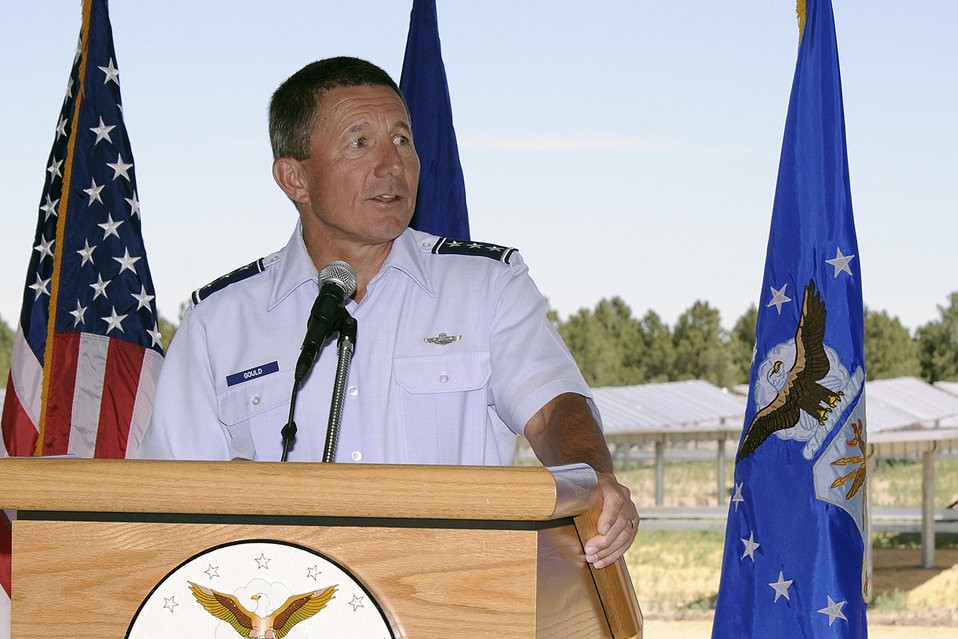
Academy hits switch on 6-MW solar array

Lt. Gen. Michael C. Gould speaks at the dedication ceremony for the Air Force Academy's 6-megawatt solar array June 13, 2011. The array will produce about 12,000 megawatt-hours per year, or 11 percent of the Academy's overall energy needs. The Academy's vision is to produce 100 percent of its power through renewable resources by 2020. General Gould is the Academy superintendent.